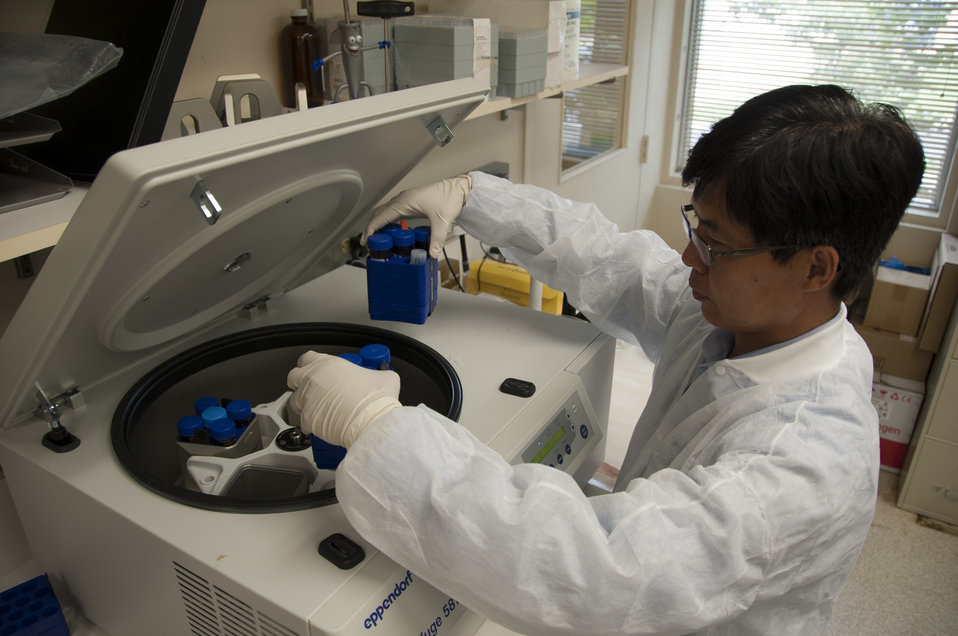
Blood Research: Saving Lives (8384)

Jason Liu, Ph.D., laboratory chief at FDA’s Office of Blood Research and Review, places blood specimens into a centrifuge to isolate blood components. A unit of whole blood can be separated, for example, into platelets and red blood cells. The separated components can be studied separately and can be used for different patients with different needs. FDA is responsible for the safety of our nation’s blood supply and is at the forefront of evaluating and encouraging innovative technologies for protecting it.

Read this Consumer Update to learn more: Advances in Saving Lives with Blood